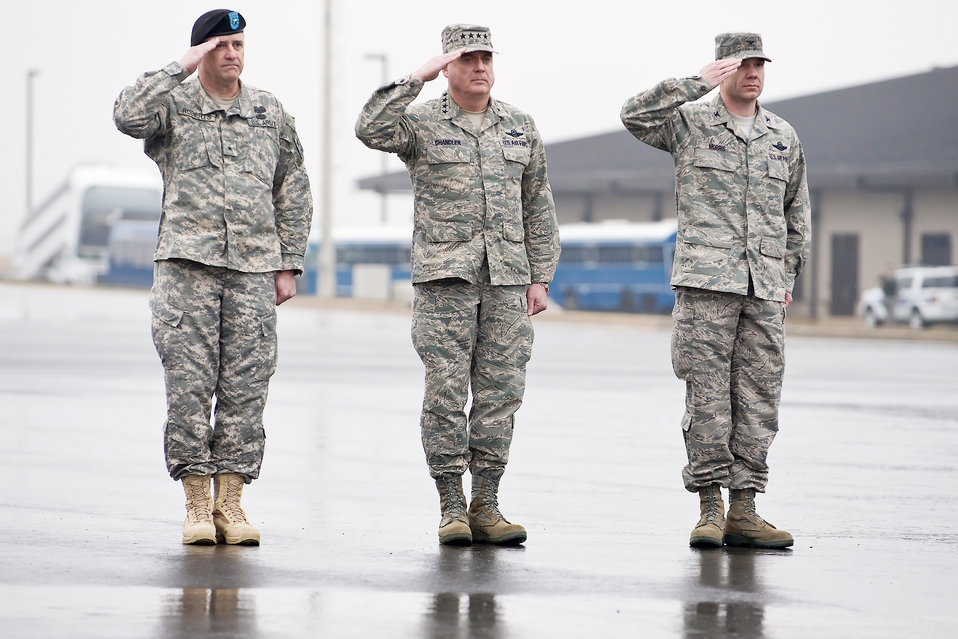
Dignified Transfer

Brig. Gen. Kenneth Roberts (from left), special assistant for the director of the Army National Guard; Gen. Carrol H.